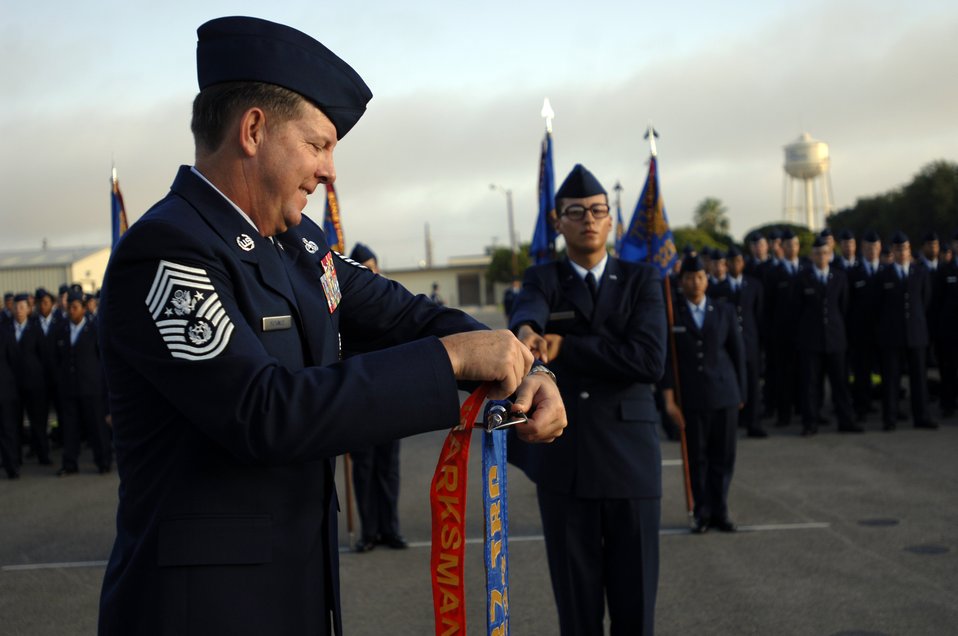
Top chief elaborates on Airman pride

Chief Master Sgt. of the Air Force Rodney J. McKinley hangs the Marksman pennant on a flight's guidon signifying